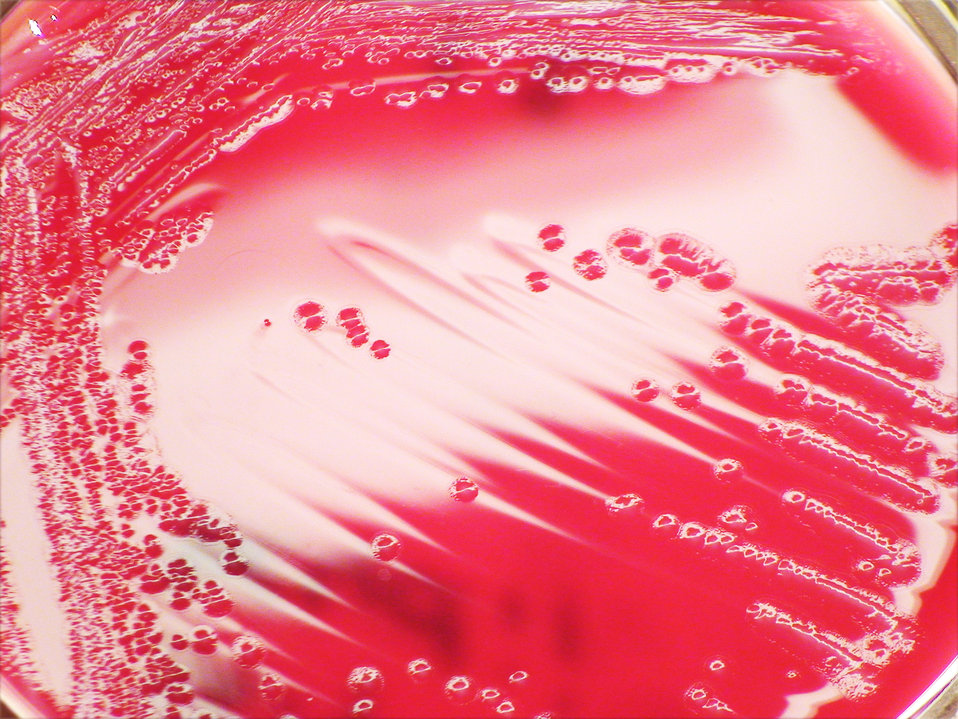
This photograph depicts the colonial morphology displayed by Gram-negative Shigella boydii bacteria, which was grown on a medium of sheep's blood agar (SBA), for a 24 hour time period, at a temperature of 37�C. Shigella spp. bacteria are pathogenic towards humans, and cause an illness known as shigellosis.